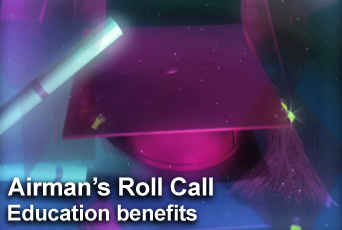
Airman's Roll Call highlights Airmen's education benefits

This week's Airman's Roll Call highlights the importance of education for the professional and personal development of all Airmen.